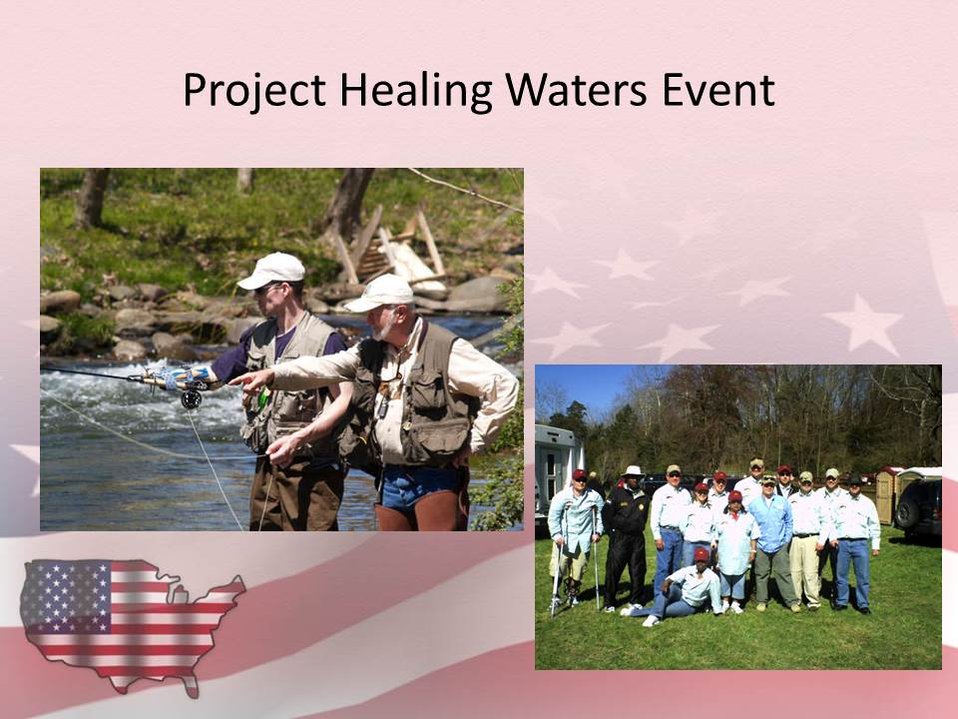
Patuxent Refuge Fishing Event with Project Healing Waters